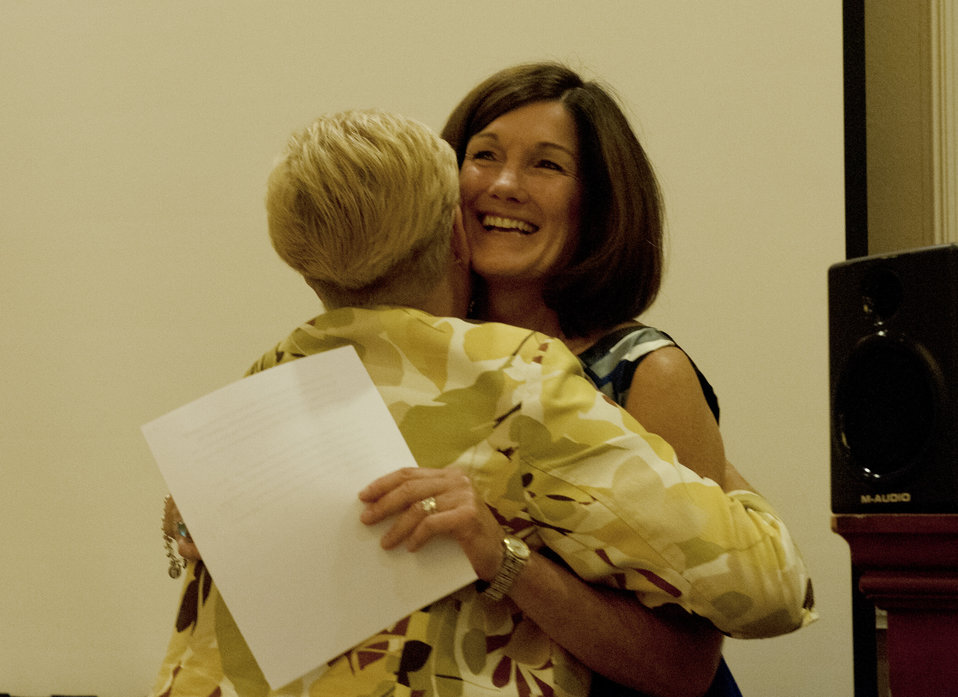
Partnerships develop Air Force youth

Betty Welsh, right, the wife of Chief of Staff of the Air Force Gen. Mark A. Welsh III, hugs Paula Roy, the wife of Chief Master Sgt. of the Air Force James A. Roy, during the Air Force Association Family Forum in Washington, D.C., Sept. 17, 2012.